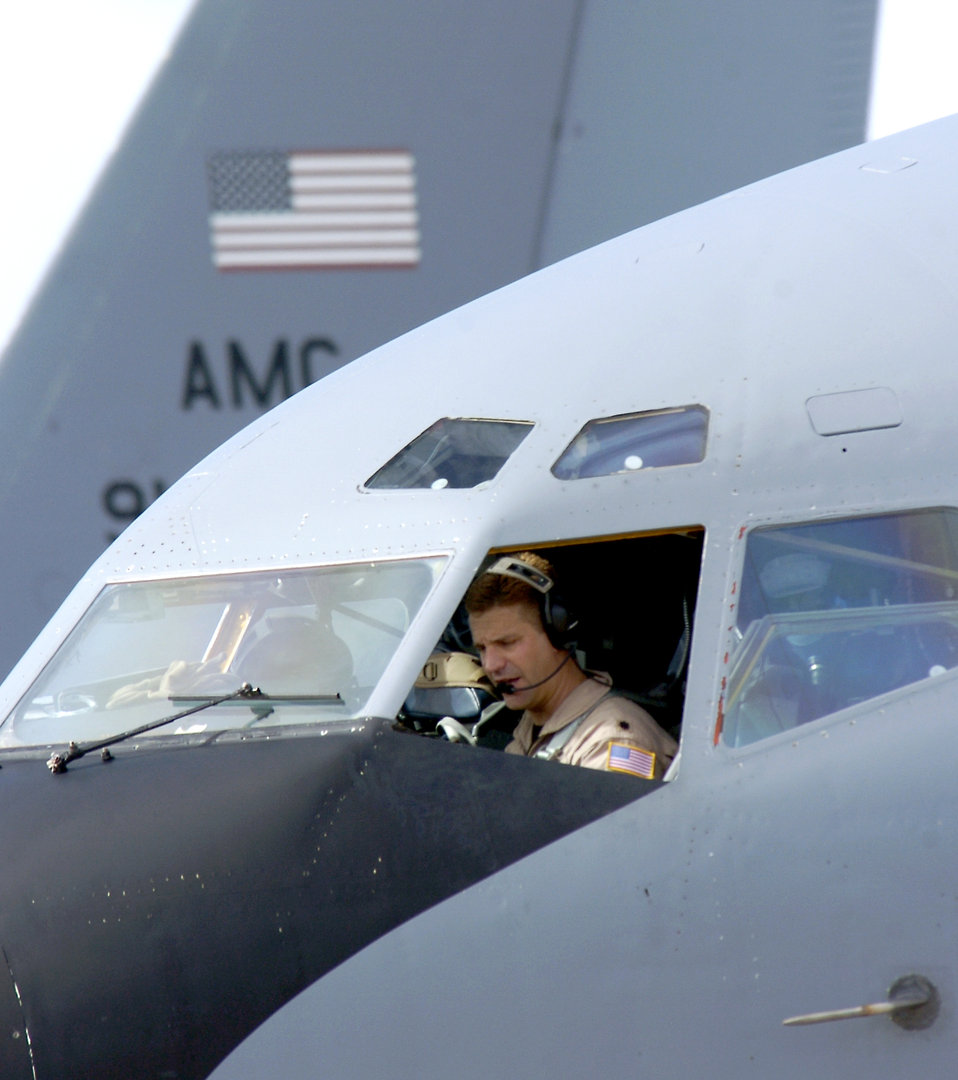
Supporting OEF

Lt. Col. David Cohen performs preflight checks on a KC-135 Stratotanker on July 7. The KC-135 later refueled a B-1 Lancer flying a close-air-support mission for Operation Enduring Freedom. Colonel Cohen is a pilot with the 28th Expeditionary Air Refueling Squadron.